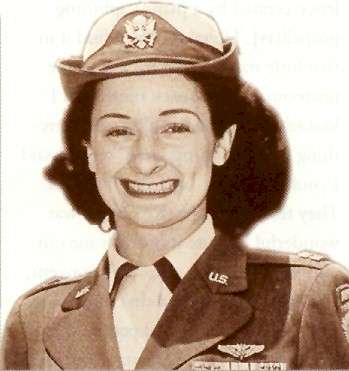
Captain Lillian Kinkella Keil

1950's -- In 1938, Lillian Kinkella Keil's mother thought her daughter might like to be one of a brand new group of women, called